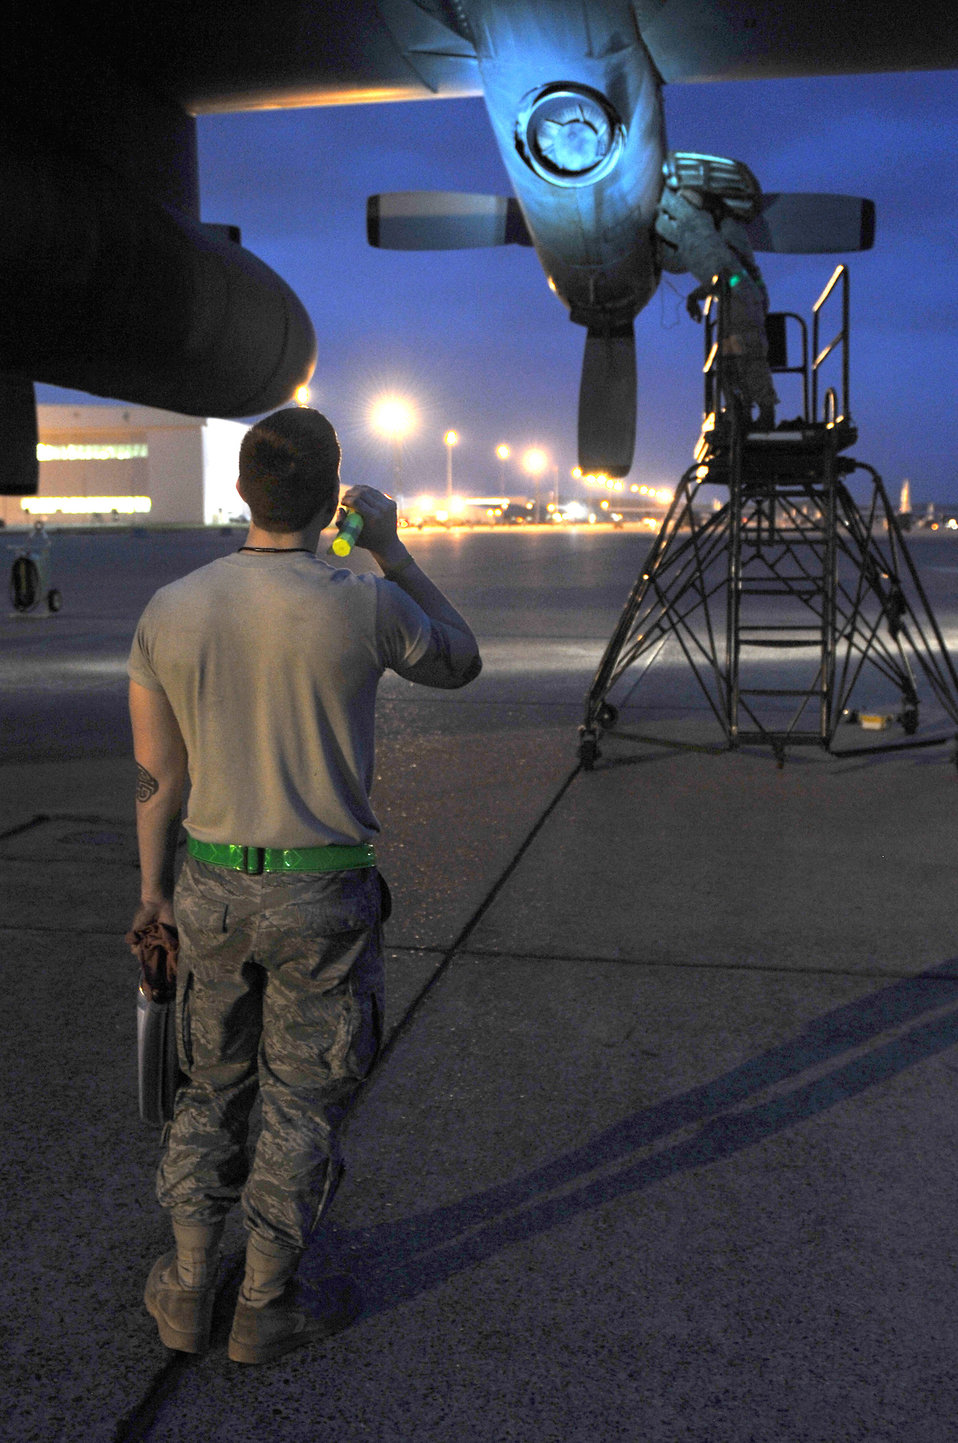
Surge week

An Airmen observes as a maintainer on a scaffold inspects the engine of a C-130 Hercules, April 14, 2011, at Little Rock Air Force Base, Ark.